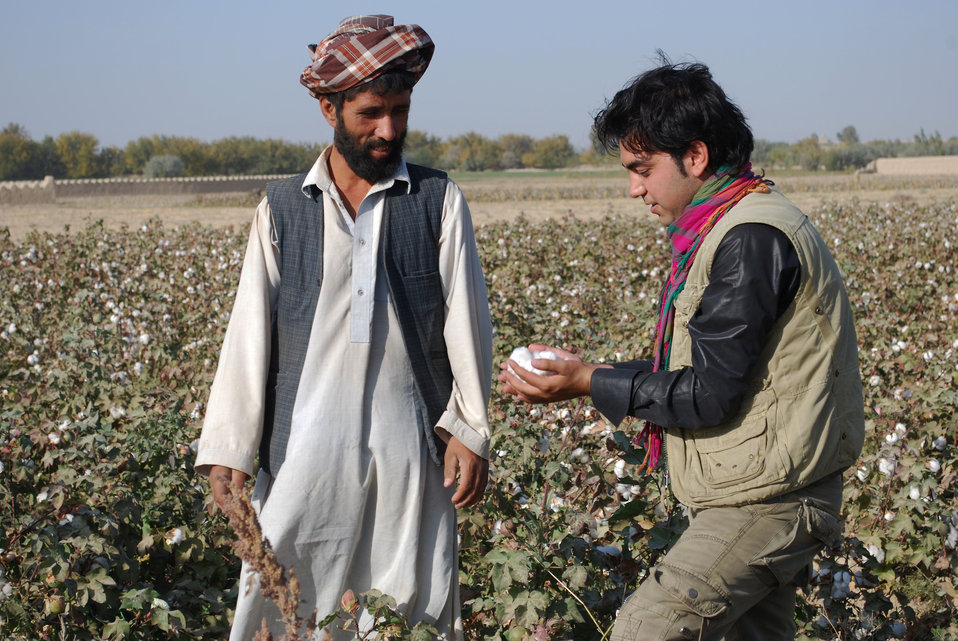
'On the Road' in Balkh Province